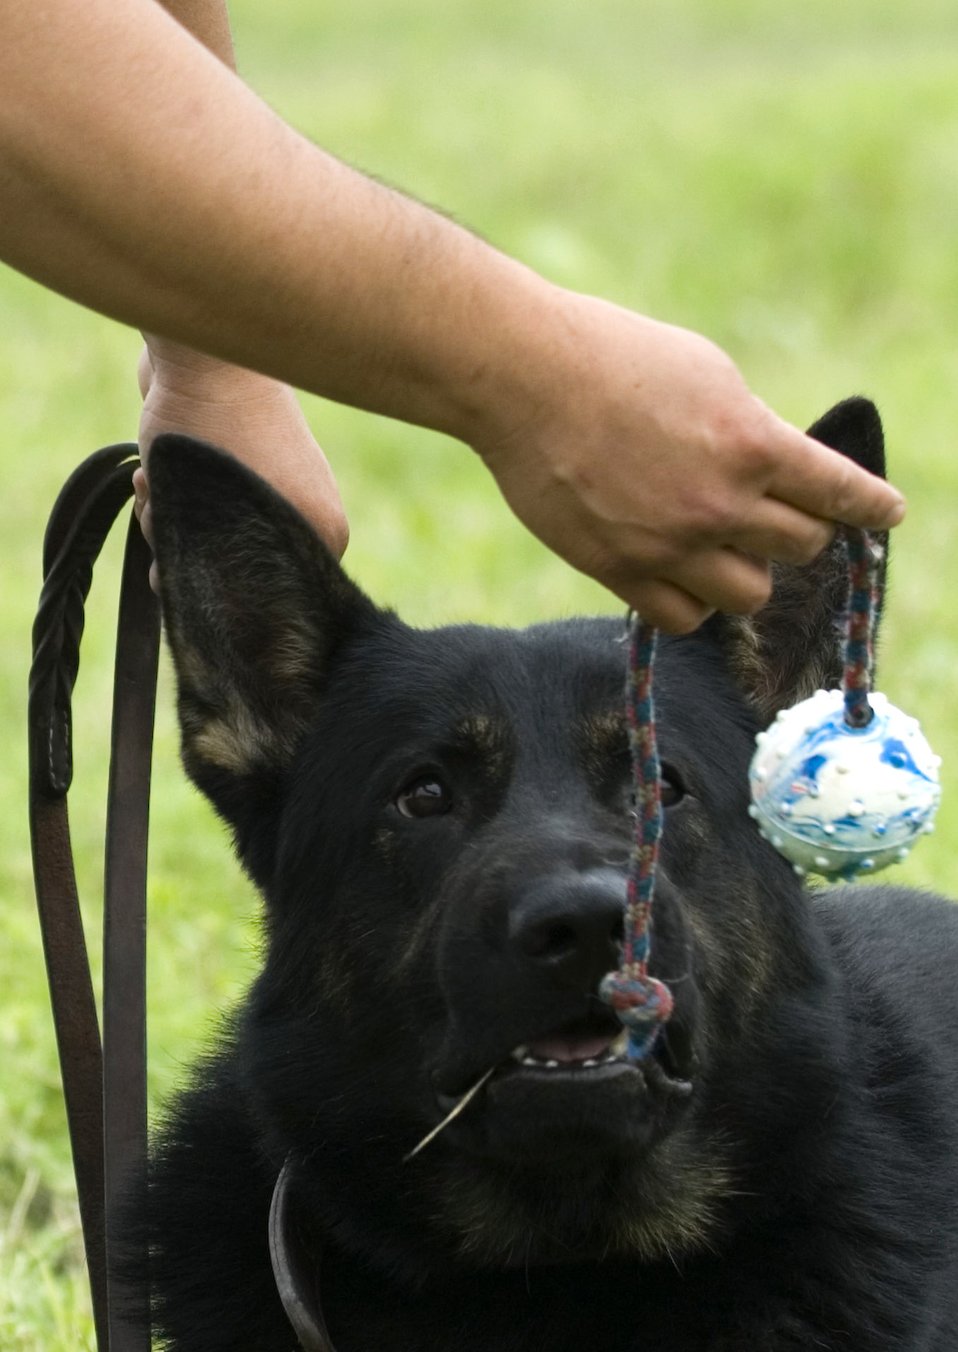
Instructors' barking orders understood at canine boot camp

A military working dog gets enticed with a ball on the end of a rope. Through play, dog handlers teach the canines how to bite on command. The 341st Training Squadron at Lackland Air Force Base, Texas, trains more than 1,300 dogs DOD-wide.